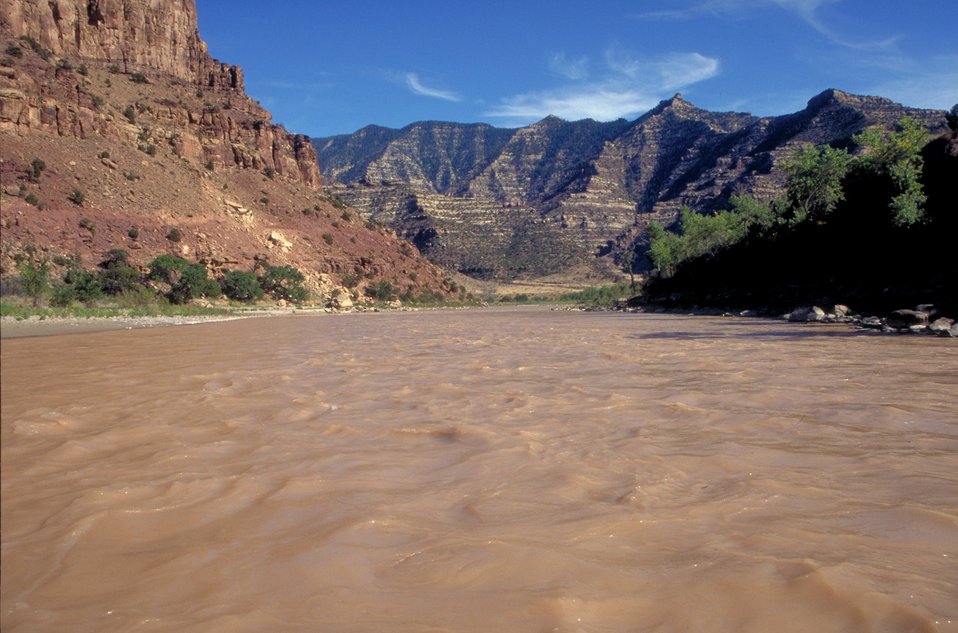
Desolation/Gray Canyons near Price, Utah.